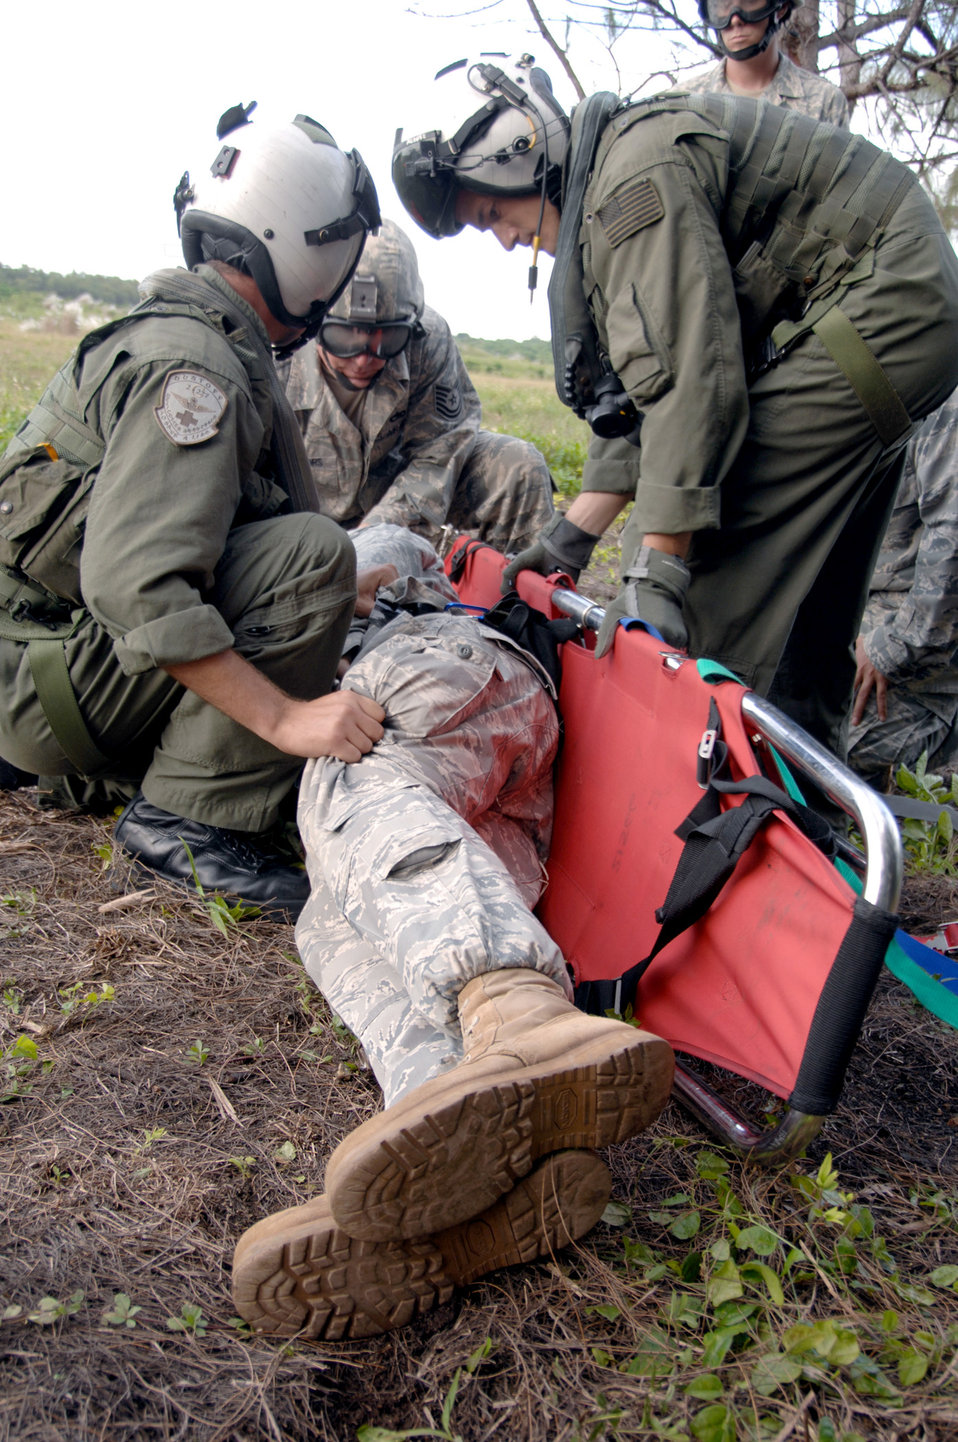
Airmen, Sailors train together for future relief efforts

Servicemembers assigned to the 36th Mobility Response Squadron and HSC-25 conduct medical evacuation training Oct. 13, 2010, at Northwest Field, Guam. The joint field training exercise was performed in an effort to interchange and familiarize themselves with each other's tactics, techniques and procedures to be able to interoperate and conduct joint humanitarian assistance/disaster relief missions in the Pacific region.